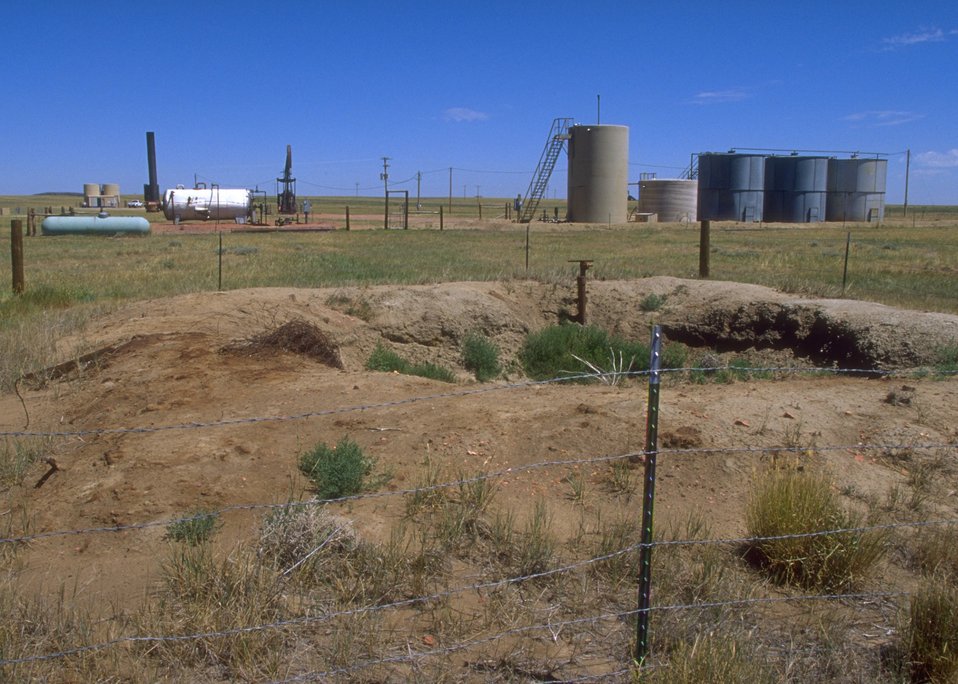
Oil well and associated facilities, Buffalo Field Office.